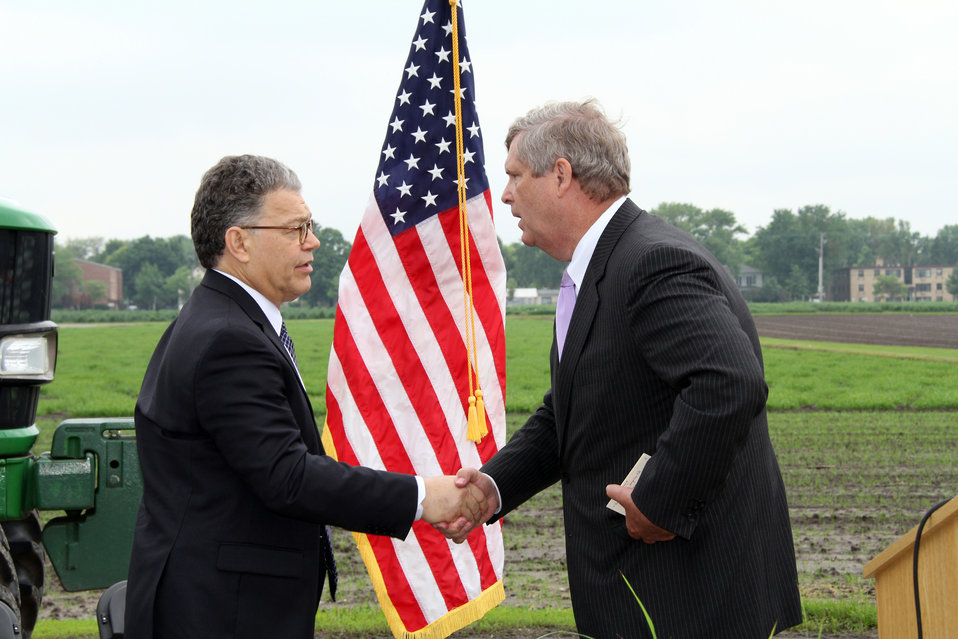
U.S. Senator Al Franken (MN) shakes hands with Agriculture Secretary Tom Vilsack at the conclusion of the event launching the Minnesota Agricultural Water Quality Certification program at St. Paul University, St. Paul, MN on Monday, Jun. 10, 2013. This program is the first of its kind in the nation and is the product of a state-federal Memorandum of Understanding (MOU) signed by Minnesota Governor Dayton, Agriculture Secretary Vilsack and former Environmental Protection Agency (EPA) Administrator Lisa Jackson in January 2012.